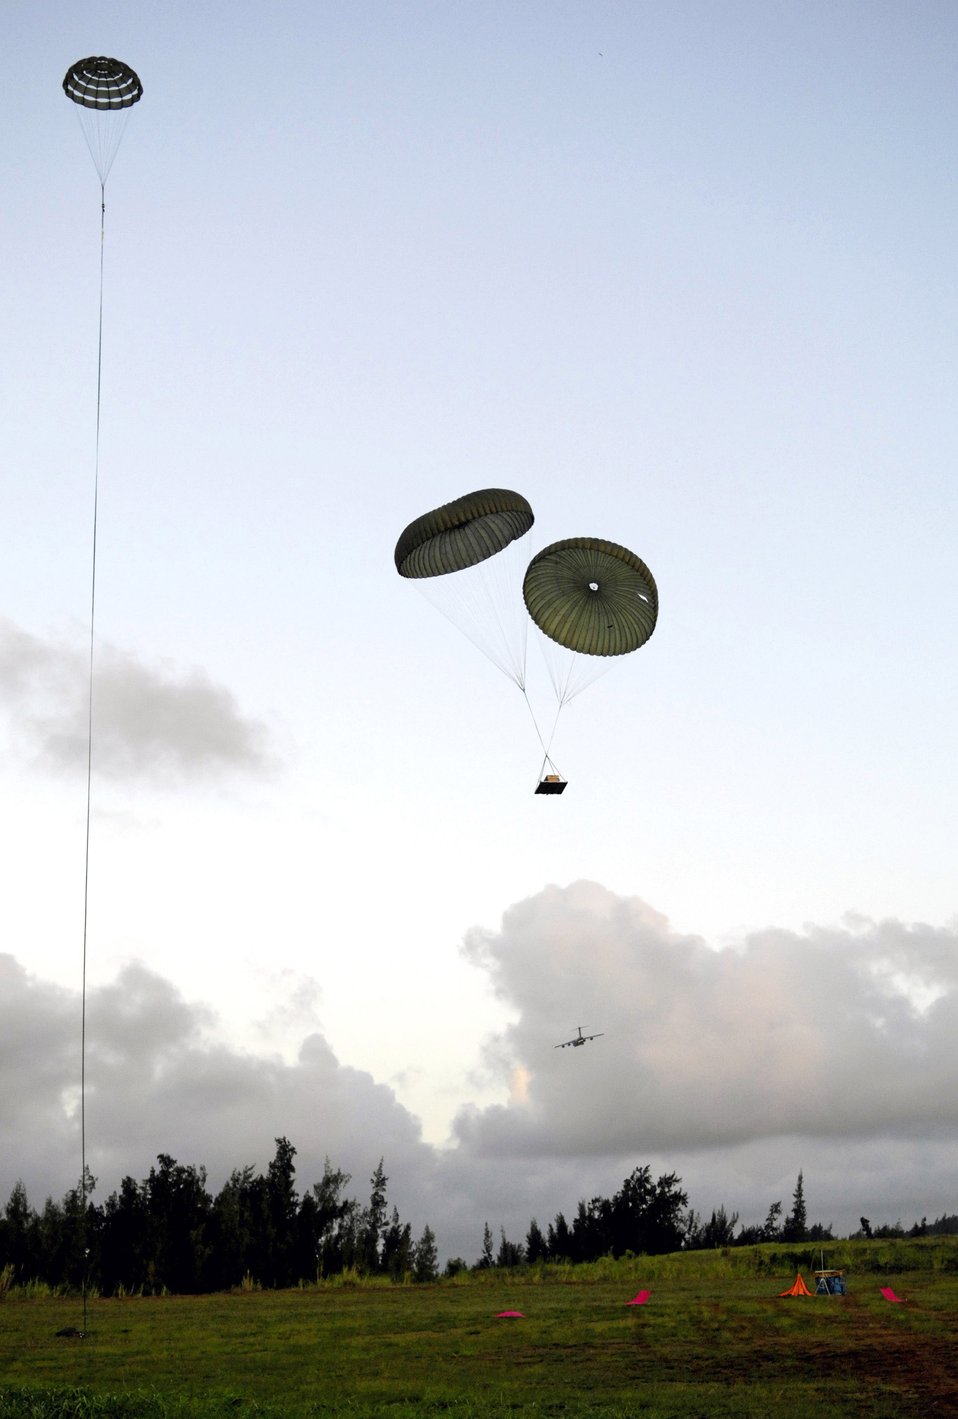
Load 'em up, drop 'em out

Practice airdrop bundles come in for a landing June 11 at the Kahuku Training Range in Hawaii. The bundles were dropped from C-17 Globemaster IIIs from the 535th Airlift Squadron at Hickam Air Force Base who are conducting their quarterly airdrop qualifications.